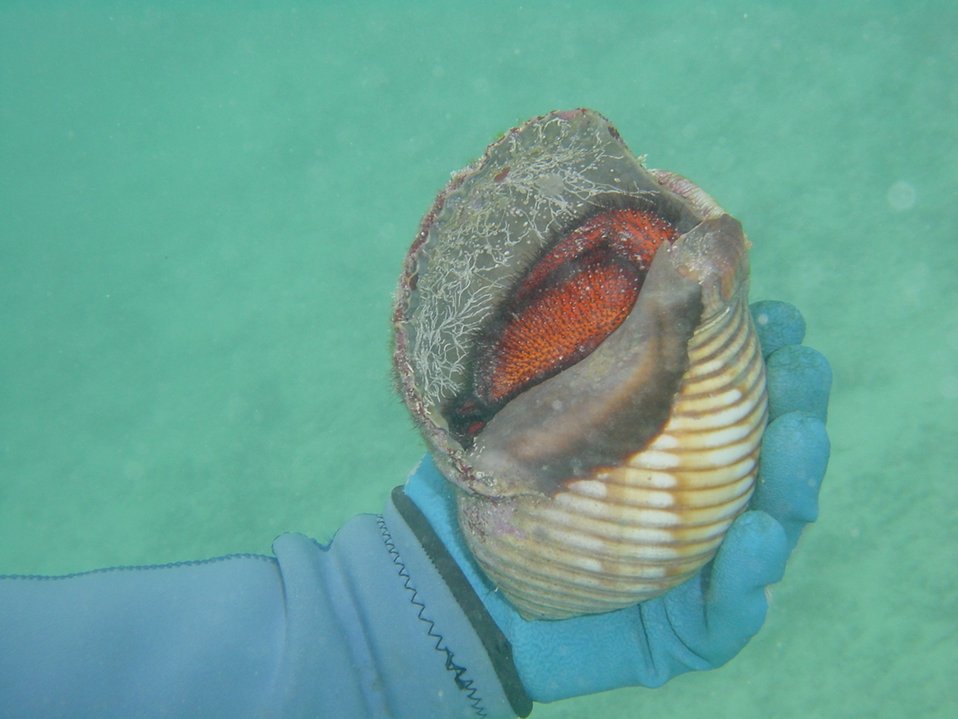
White-spotted hermit crab (Dardanus megistos).